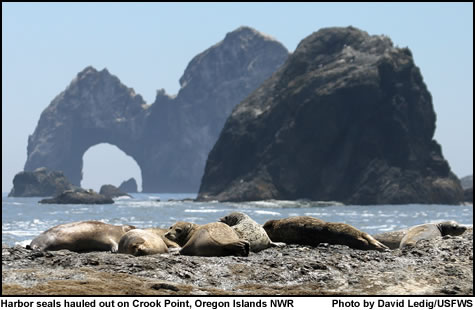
Harbor seals and Crook Point - Oregon Islands NWR

Each rock in the water along the Oregon Coast is protected as part of Oregon Islands National Wildlife Refuge. The refuge includes 1,853 rocks and spans 320 miles of the Oregon coast.